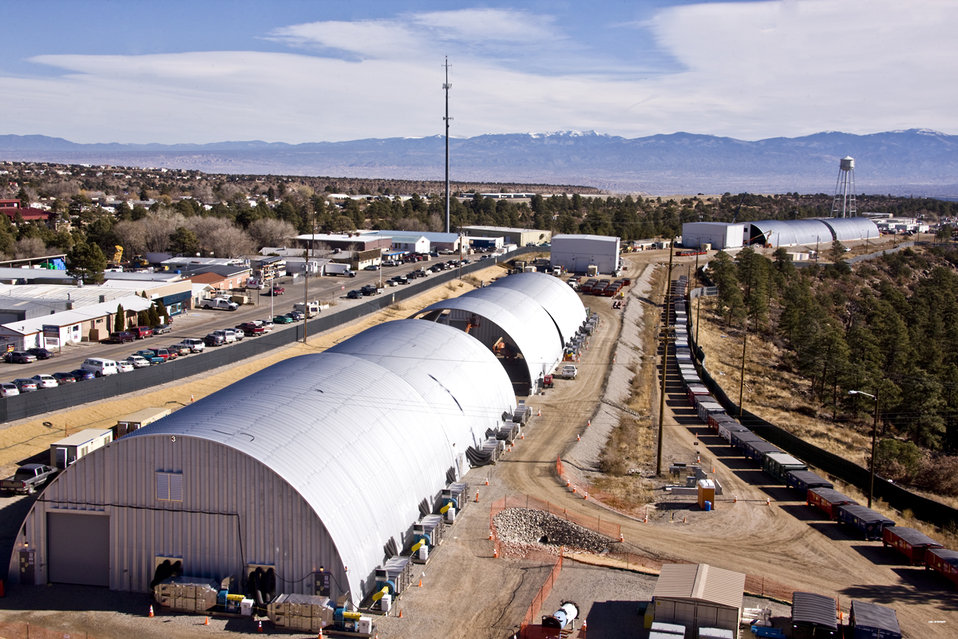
Los Alamos MDA-B excavation

The excavation of Material Disposal Area B is occurring
inside large metal enclosures shown here.